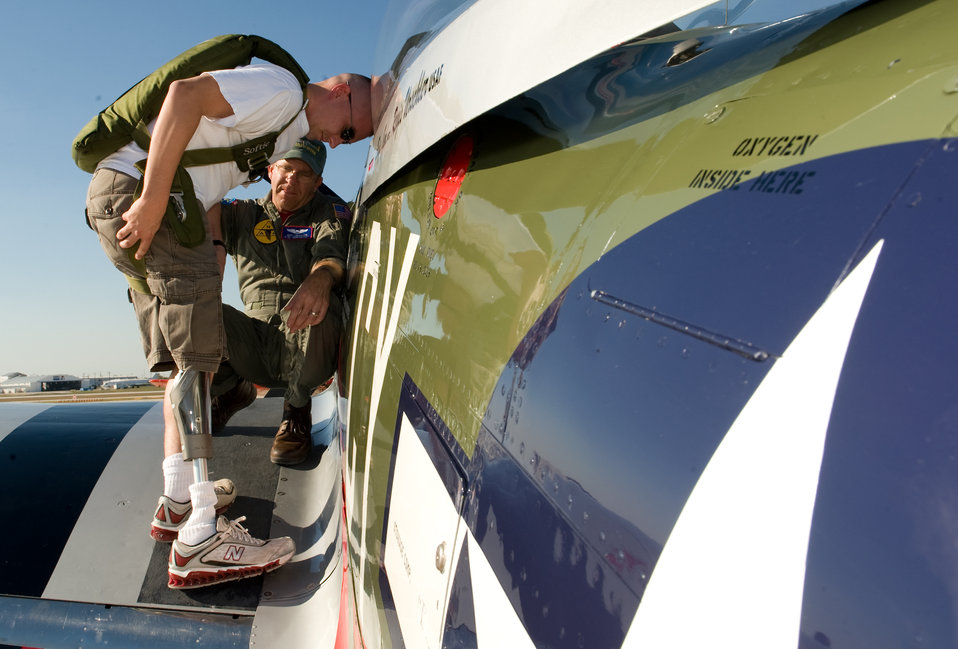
Warrior Flight